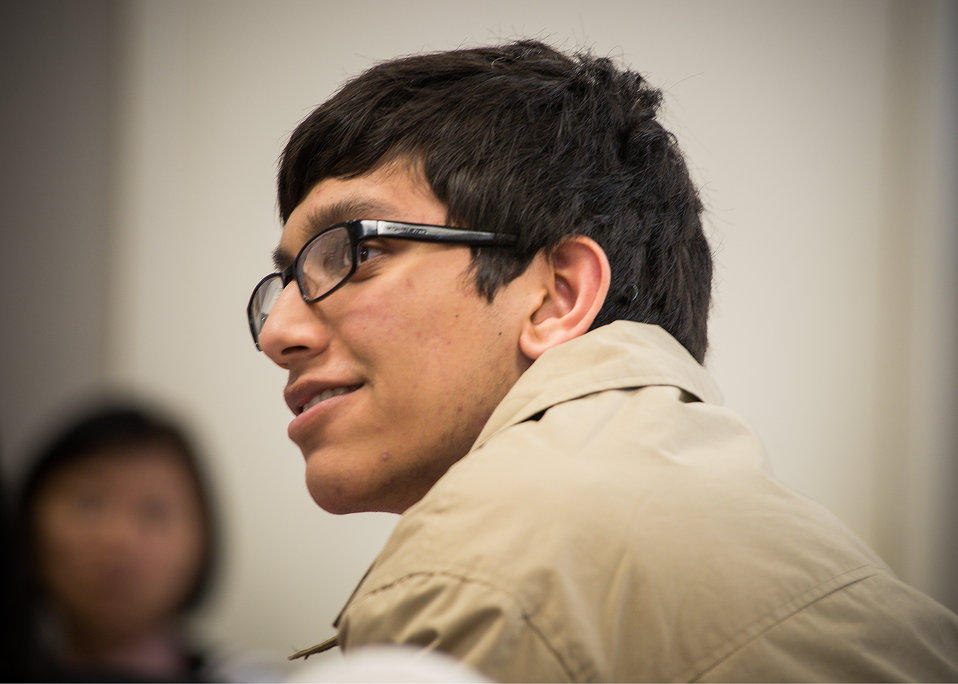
Rushi Patel, a student from Thomas Jefferson High School of Science and Technology in Alexandria, VA. listens to a speaker during the U.S. Department of Agriculture (USDA), Office of the Chief Information Officer (OCIO) IT Job Shadow Day, Tuesday, Mar. 25, 2014. The OCIO IT Job Shadow Day hosts students from local high schools in the Washington, D.C. area annually with IT professionals and agricultural specialists from a variety of mission areas at USDA.